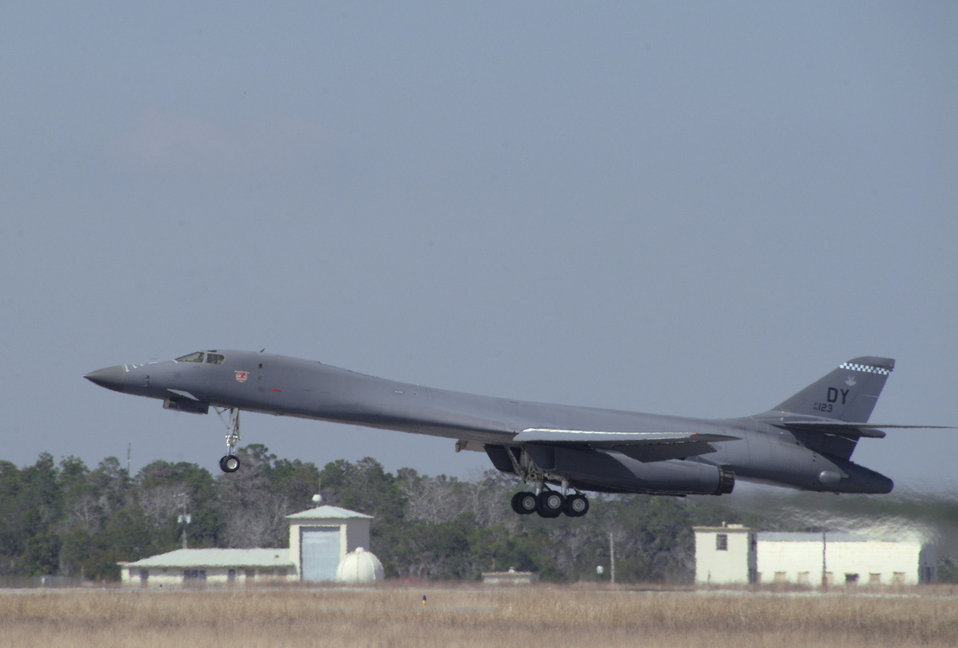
Check your 'six'

A B-1B Lancer takes off Feb. 25 from Eglin Air Force Base, Fla. The bomber from the 337th Test and Evaluation Squadron from Dyess AFB, Texas, was at Eglin AFB for a B-1B tail warning function test to analyze if a radar that faces the rear of B-1B detects incoming missiles or aircraft. If detected, the system can deploy defensive countermeasures.